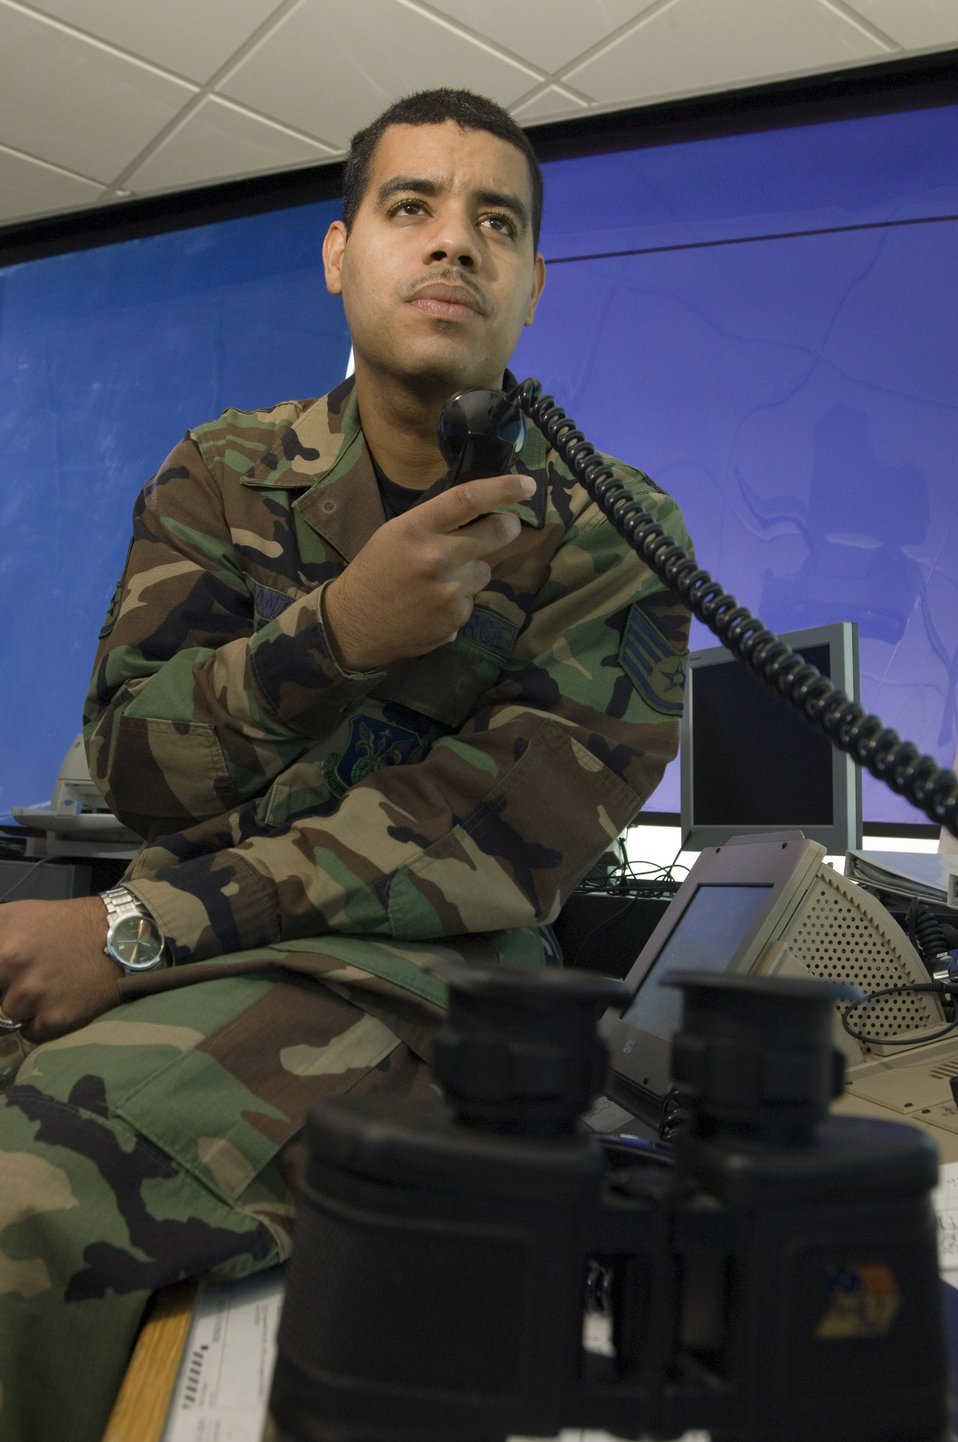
Controlling the Spanish sky

MORON AIR BASE, Spain -- Staff Sgt. Manuel Gonzalez clears a C-5 Galaxy for departure here Sept. 21. Sergeant Gonzalez is an air traffic control watch supervisor with the 496th Air Base Squadron.